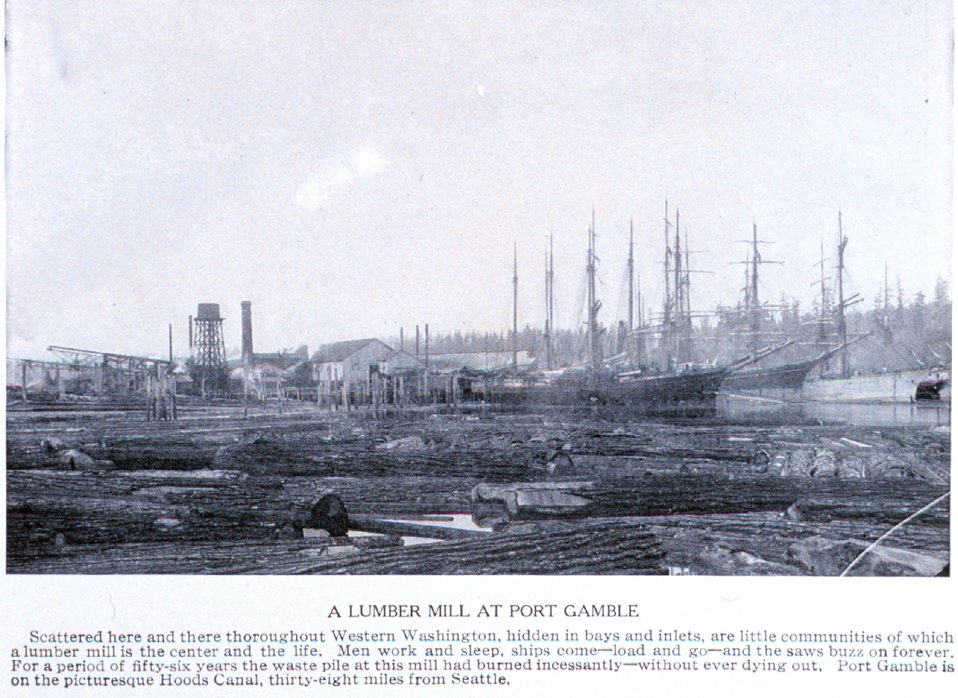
'A Lumber Mill at Port Gamble' on Hood's Canal. In: 'Puget Sound and Western Washington Cities-Towns Scenery', by Robert A. Reid, Robert A. Reid Publisher, Seattle, 1912. P. 149.